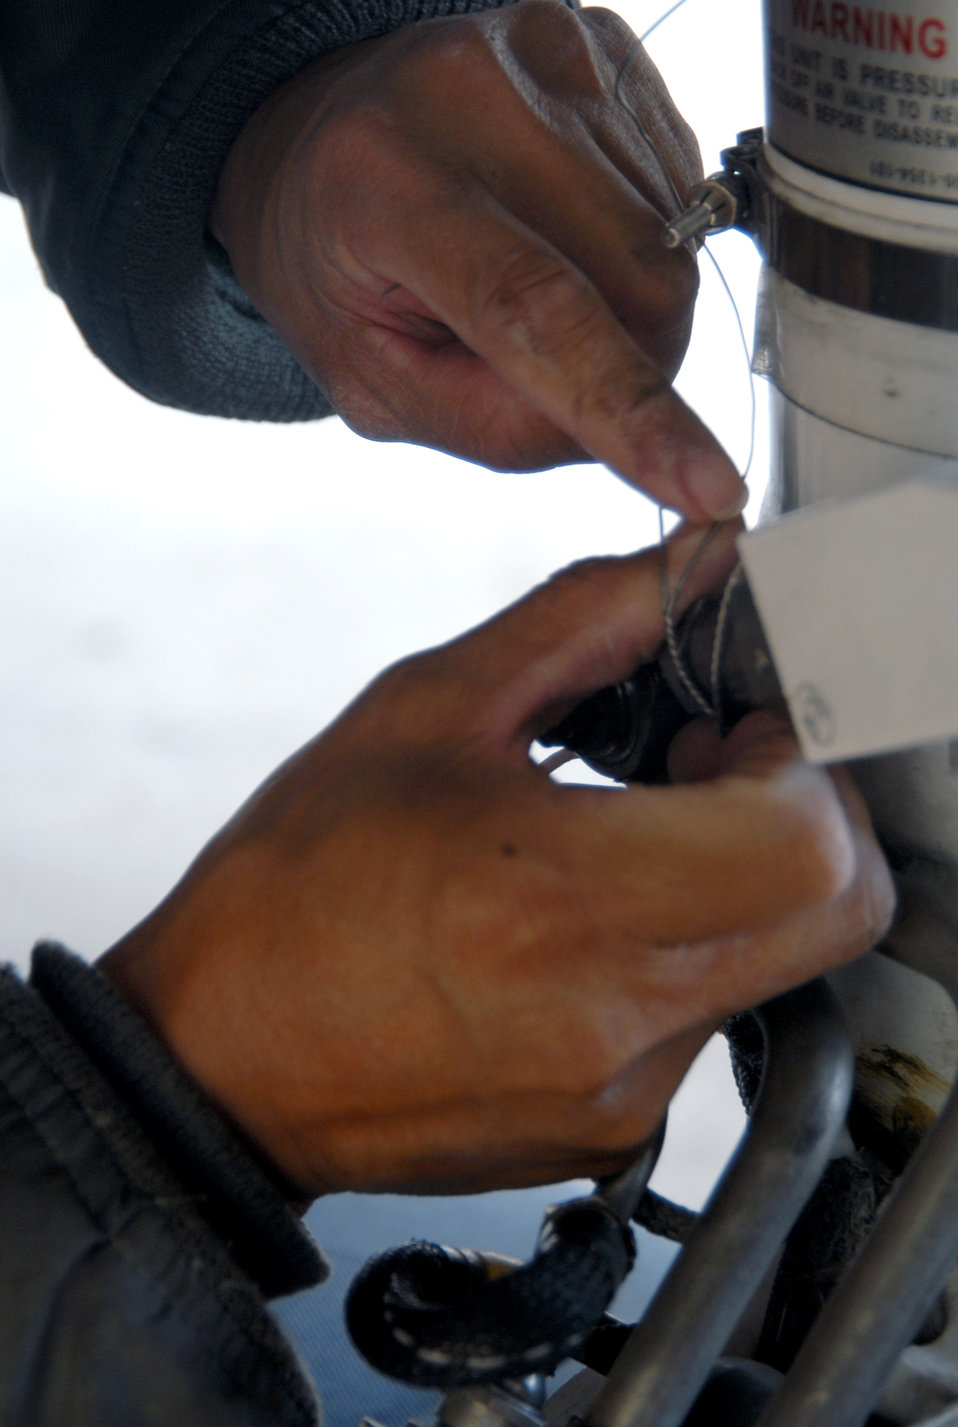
Edwards test squadron test drives Global Hawk

An Airman with the Global Hawk Combined Test Force performs maintenance on a Global Hawk Oct. 24 at Edwards Air Force Base, Calif.